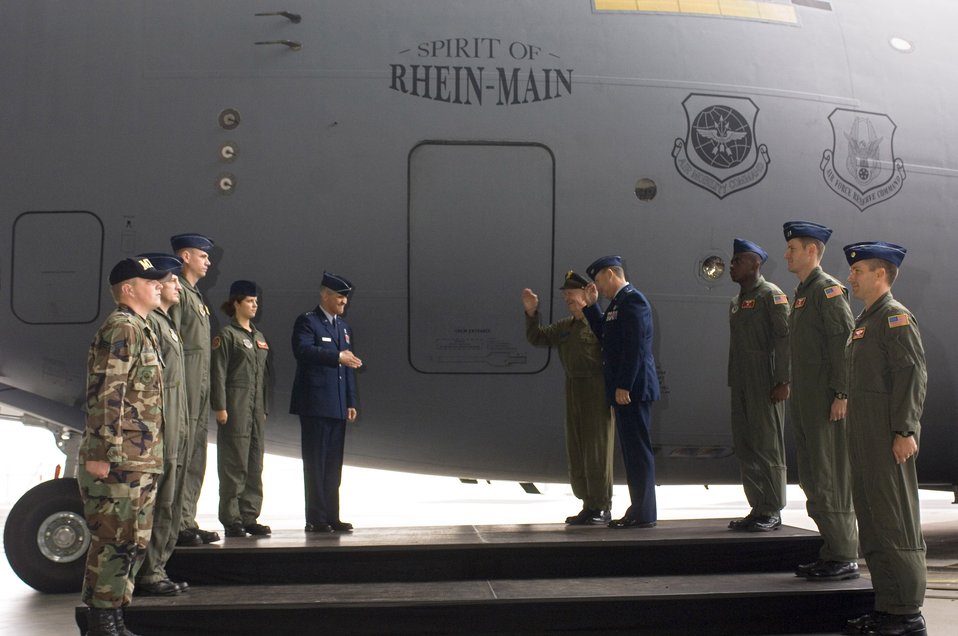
Airlift honored

RHEIN-MAIN AIR BASE, Germany -- At the official closing ceremony of this base Oct. 10, (from left) Air Mobility Command vice commander Lt. Gen. Christopher A. Kelly, retired Lt. Col. Gail Halvorsen and Col. Bradley Denison, 469th Air Base Group commander, christen a C-17 Globemaster III the